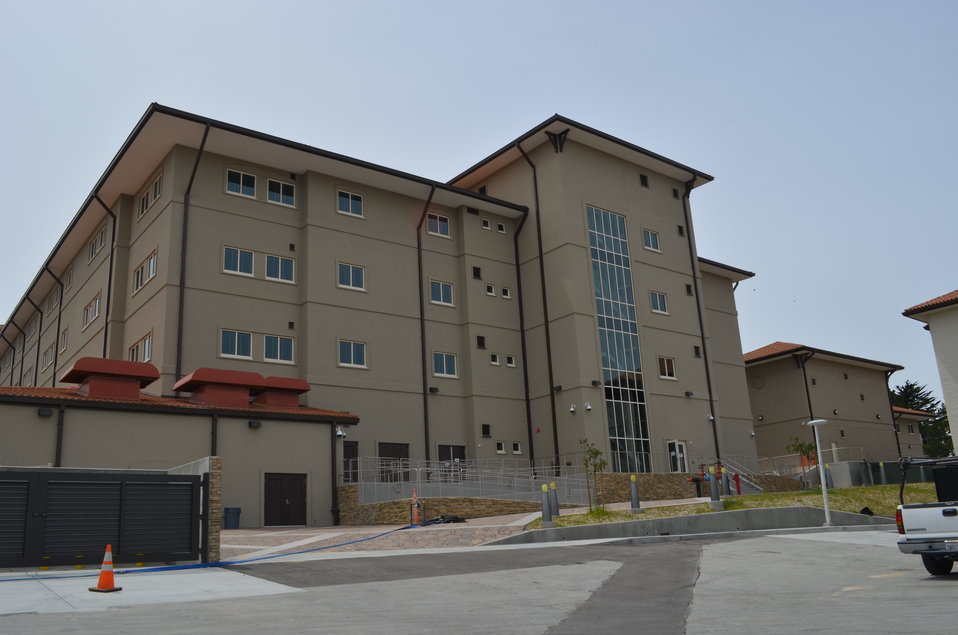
Corps manages vital projects at Presidio

The exterior of the new general instruction building for the Defense Language Institute Foreign Language Center at the Presidio of Monterey in Monterey, Calif., May 8, 2014. The institute is one of several major construction projects at the Presidio managed by the U.S. Army Corps of Engineers Sacramento District and is scheduled to be complete August 2014. The program incorporates the latest energy and water conservation technologies in order to operate more efficiently and in a sustainable, environmentally friendly manner.